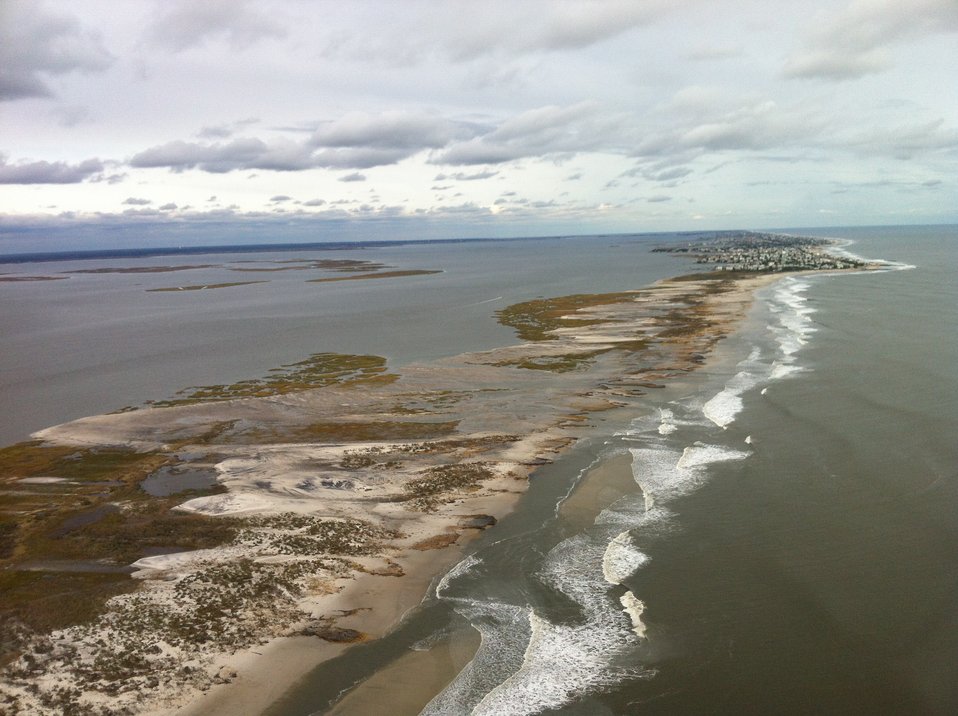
Aerial photo of Holgate unit at Edwin B. Forsythe National Wildlife Refuge (NJ)